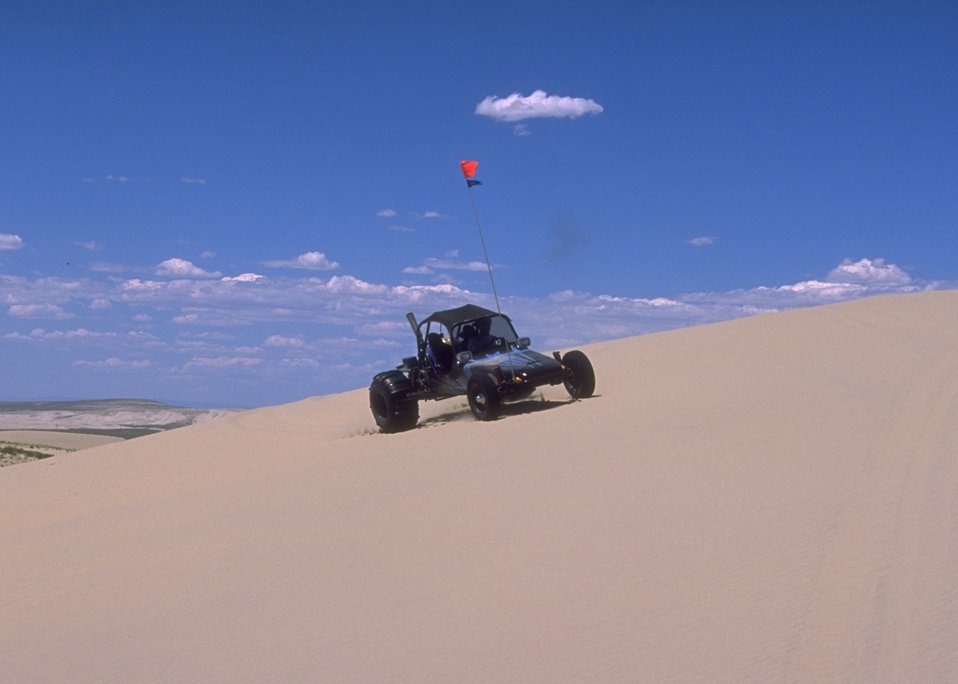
Sand Dunes OHV Area, Rock Springs Field Office.